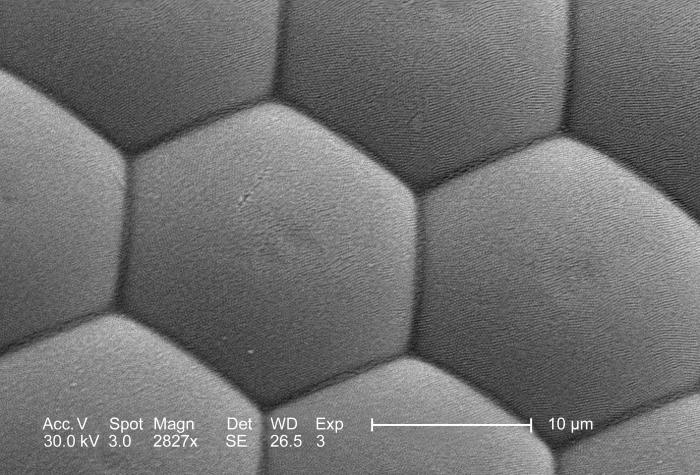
Under this moderately-high magnification of 2827x, this scanning electron micrograph (SEM) depicted the surface of an unidentified insect's compound eye. Discovered diceased on the grounds of the Decatur, Georgia suburbs, the eye is seen to be composed of repeating hexagonally-shaped units known as 'ommatidia', hence the term 'compound'. The white specs on the surface of the eye are merely debris particles of unknown origin. In order to fully appreciate the structural hierarchy of the compound eye, see PHIL 7875, 7877, 7878, this image (7879), 7880, and 7881, for successively greater magnifications of this visual structure.